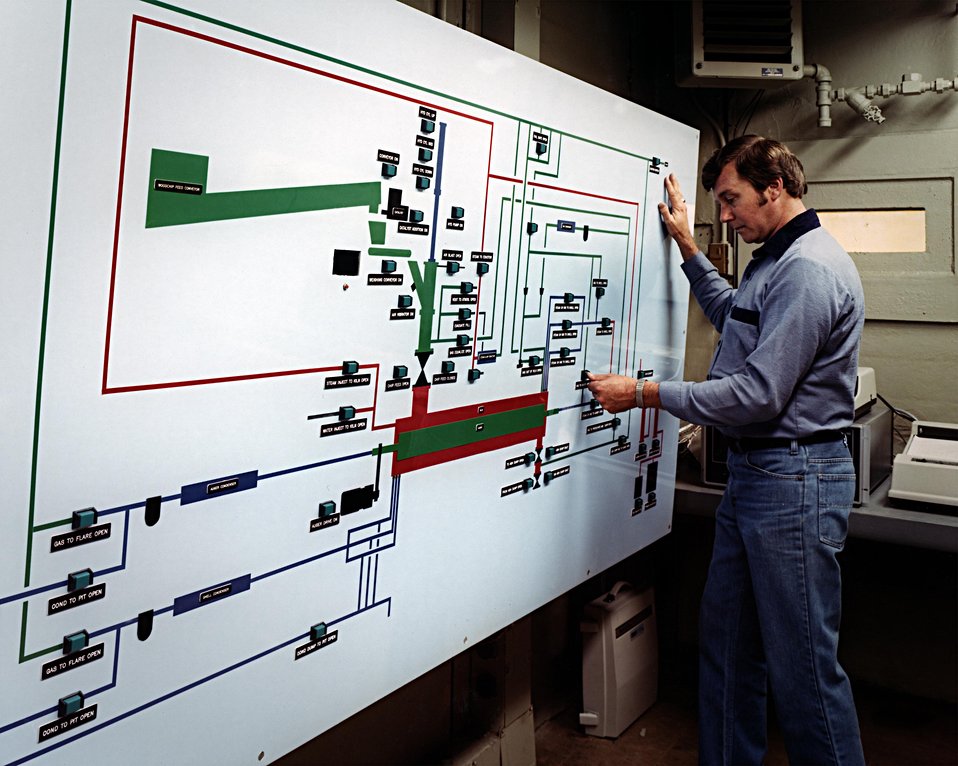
WORKER MONITORS THE VALVE CONTROL PANEL IN THE CONTROL ROOM.

RESEARCHERS WILL ASSESS THE FEASIBILITY OF GASIFYING BIOMASS TO PRODUCE FUEL IN A SMALL, CRITICAL PRESSURE, LOW TEMPERATURE, WATER/STEAM GASIFIER. IN THE GASIFIER, BIOMASS (WOOD,PLANT OR ANIMAL WASTES, ETC.) IS MIXED WITH STEAM AND OXYGEN AT HIGH TEMPERATURES AND PRESSURES TO PRODUCE GAS, LIQUID FUELS AND/OR FUEL OIL. A LOW-COST SYSTEM WAS PRO- POSED, DIFFERENT TYPES OF BIOMASS WERE STUDIED, MODELS WERE ESTABLISHED, AND A THREE DRY TONS PER-DAY PROCESS DEVELOPMENT UNIT WAS DESIGNED. IN ADDITION, AN ECONOMIC ASSESSMENT WAS MADE CONCERNING THE MEDIUM BTU GAS END PRODUCT. THIS VIEW IS A CLOSE-UP OF A VALVE CONTROL PANEL IN A PDU CONTROL ROOM.